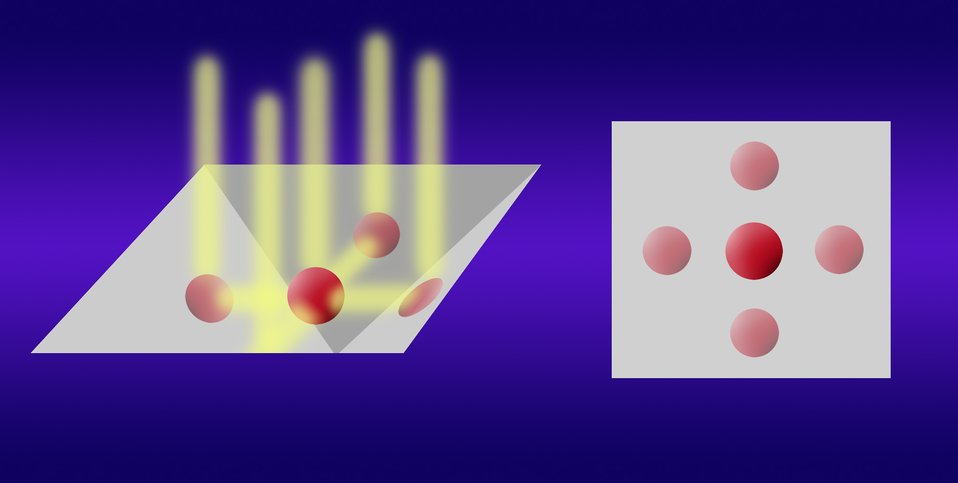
Nanoparticles; Microscope Design

Heart of the orthogonal tracking microscope system developed at NIST is this nanoparticle solution sample well etched in silicon. Careful orientation of the silicon crystal makes it possible to chemically etch angled sides in the well so smooth they act as mirrors. In this configuration, four side views of a nanoparticle floating in solution (left) are reflected up. A microscope above the well sees the real particle (center, right) and four reflections that show the particle's vertical position.